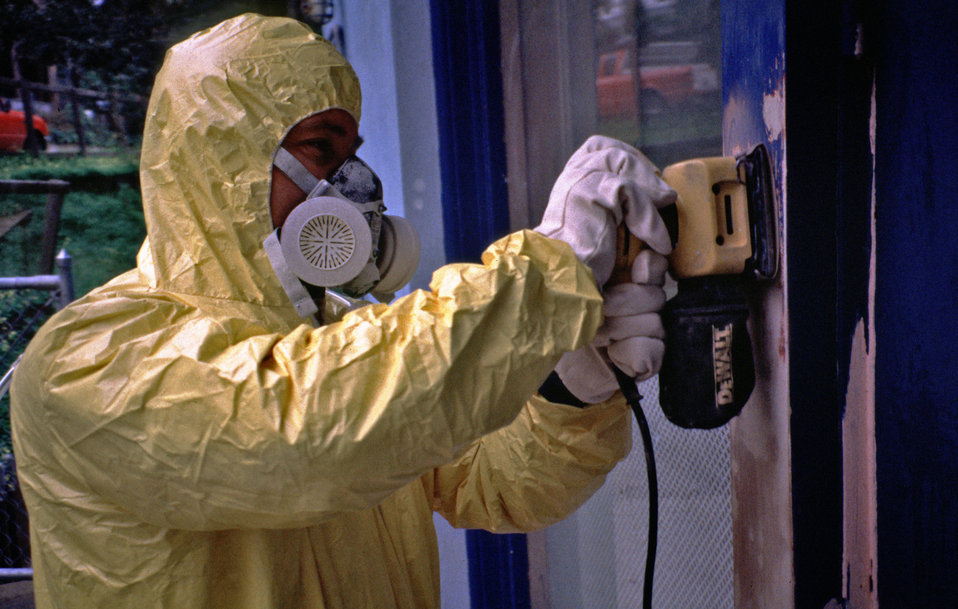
While wearing a protective mask and suit, this worker was using a power sander in a 1999 exercise, demonstrating an exterior renovation method that was typically used on residences where lead-based paint was present. This was a high exposure method.